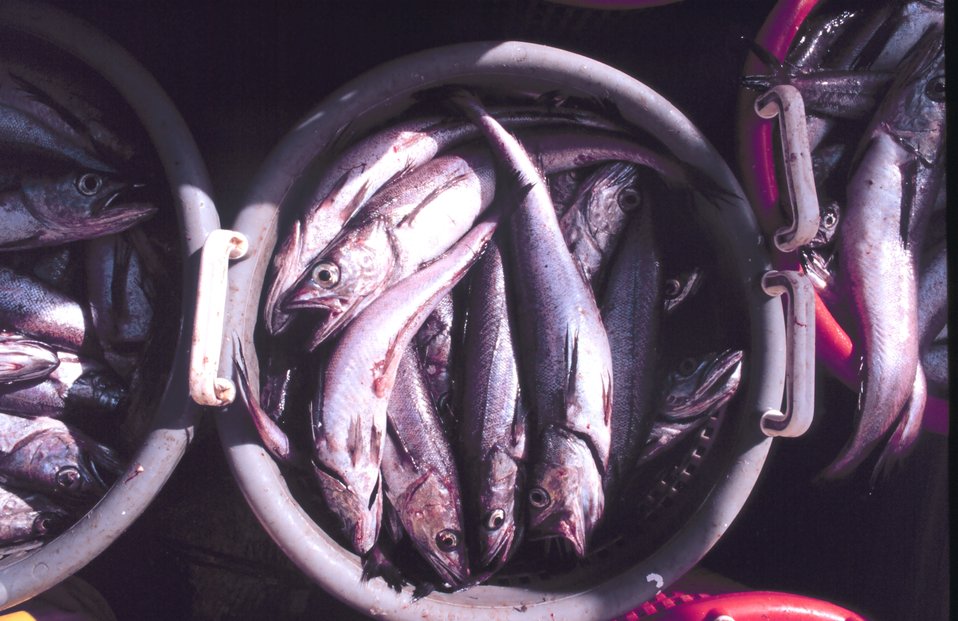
A bucket load of fish ready for measuring and weighing.